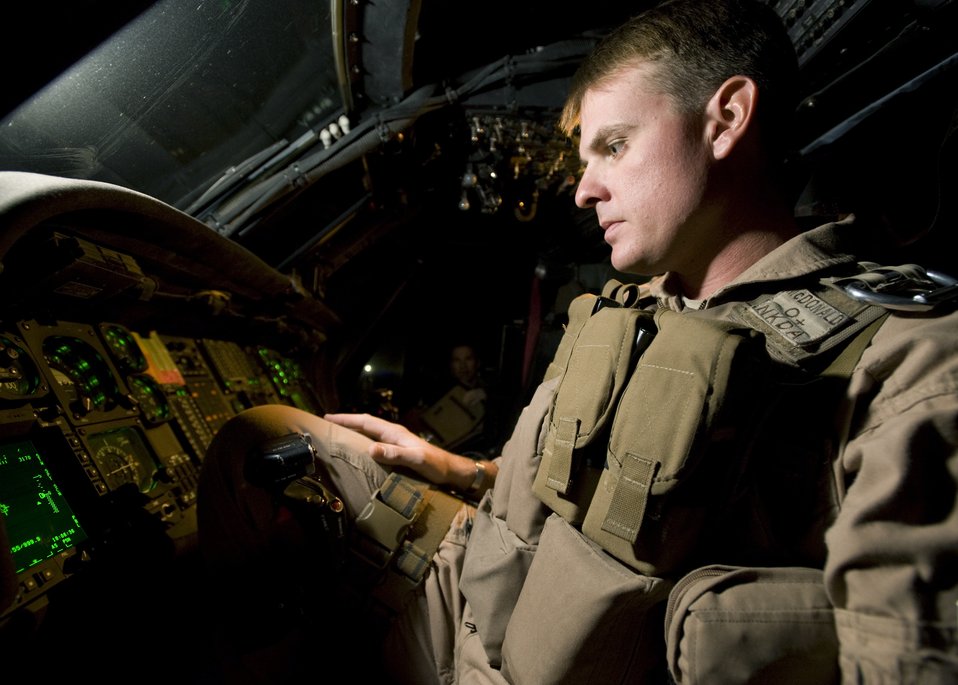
Airmen enhance Army medical evacuation mission

1st Lt. Brough McDonald preflights an HH-60 Pave Hawk before his aircrew begins its shift on alert Aug. 13 at Kandahar Air Base, Afghanistan. Lieutenant McDonald is a rescue pilot for the 305th Expeditionary Rescue Squadron from Davis-Mothan Air Force Base, Ariz.